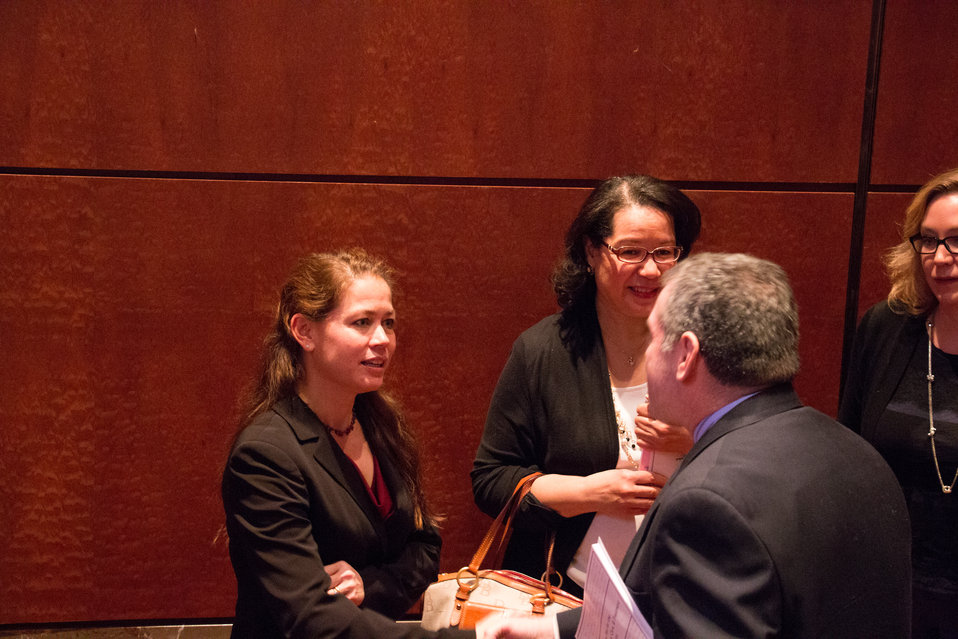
VHAP Launch (341 of 511)